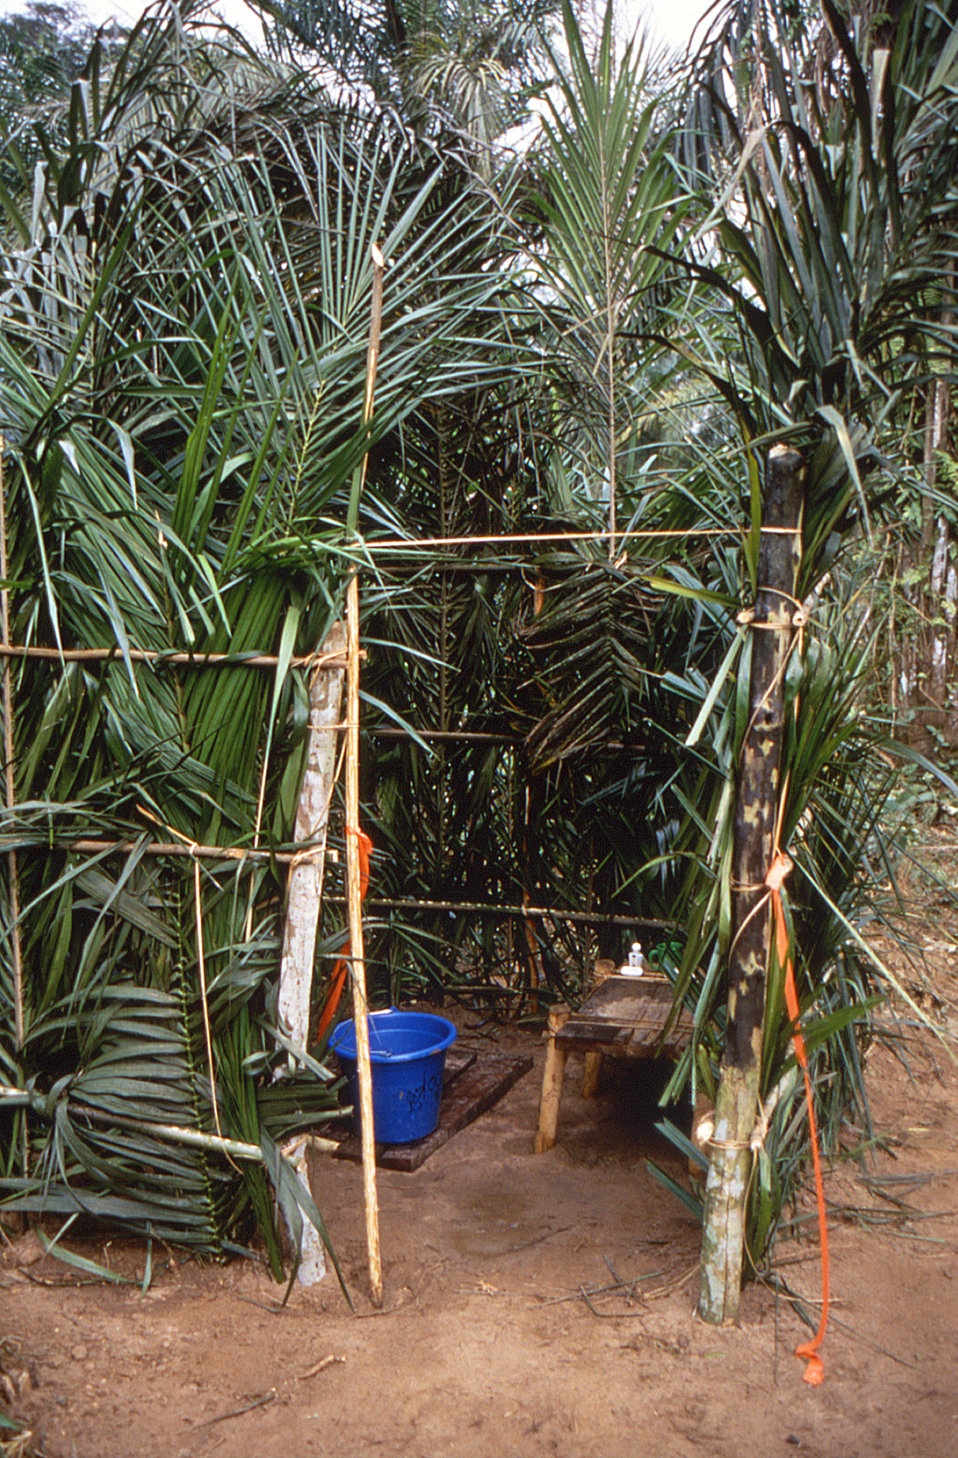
This image was created during an investigation into an outbreak of monkeypox, which took place in the Democratic Republic of the Congo (DRC), 1996 to 1997, formerly Zaire. Depicted here, was the team's newly-constructed 'shower'.